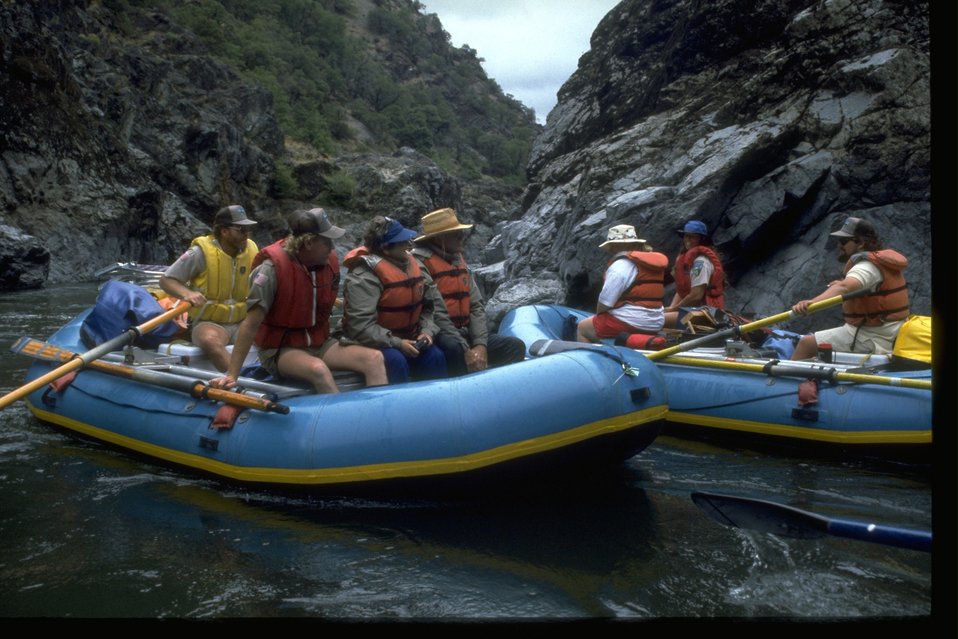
Two rafts next to each other on the wild section of the Rogue River.